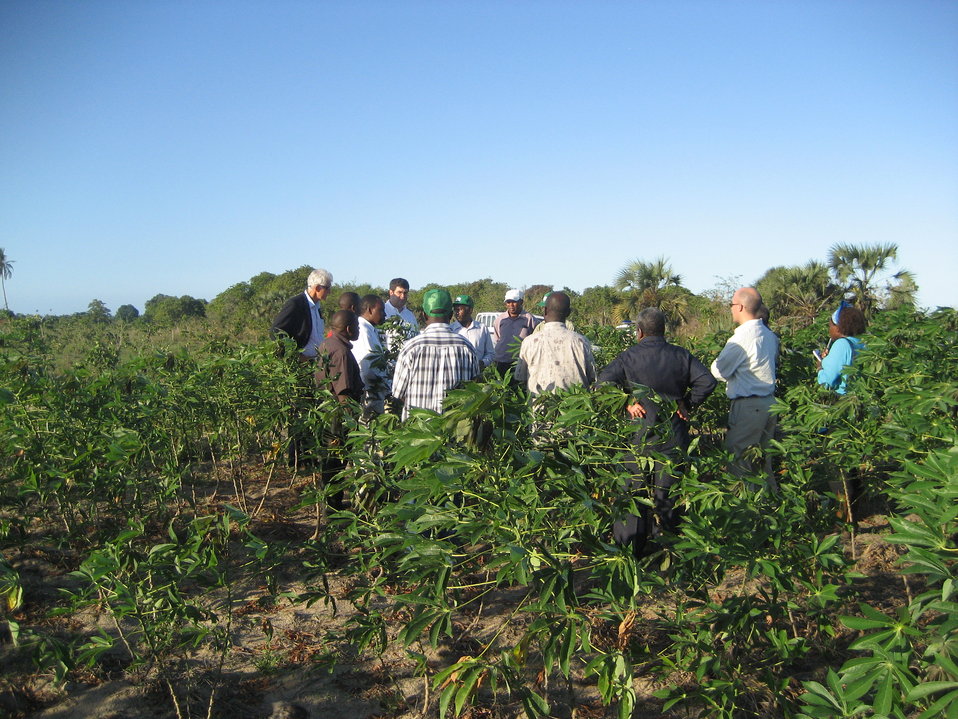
Deputy Secretary Neal Wolin’s trip to Africa 2009

Deputy Secretary Wolin visits an International Institute for Tropical Agriculture (IITA) research station that focuses on the cassava plant in Bagamoyo, Tanzania to learn more about the importance of adaptive agriculture research in boosting yields in sub-Saharan African agriculture and to underscore the U.S. government’s commitment to financing research of this kind.